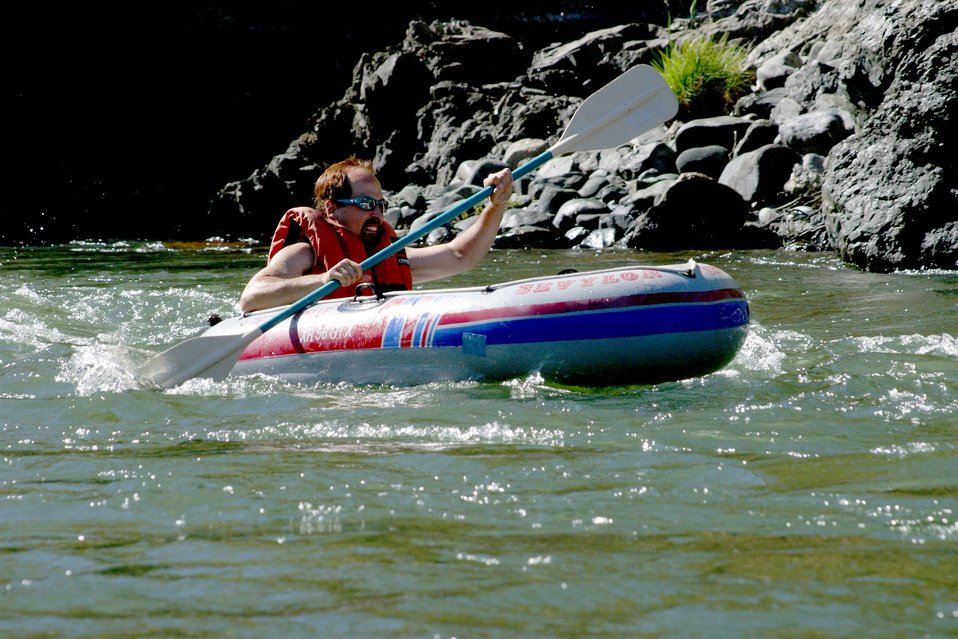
Boater at Hog Creek.